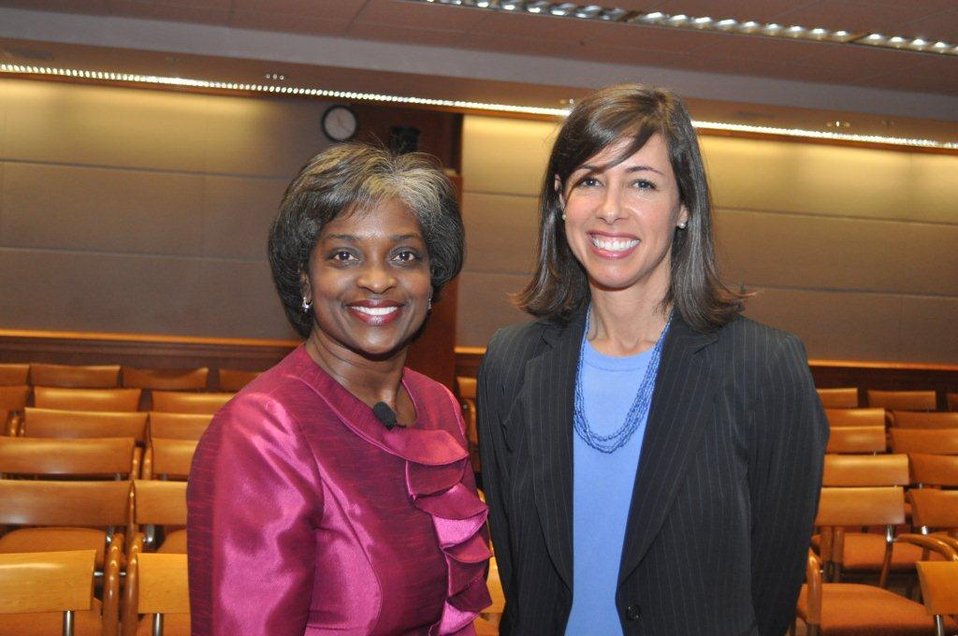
Acting Chairwoman Mignon Clyburn and Commissioner Jessica Rosenworcel at Chairwoman’s swearing in ceremony